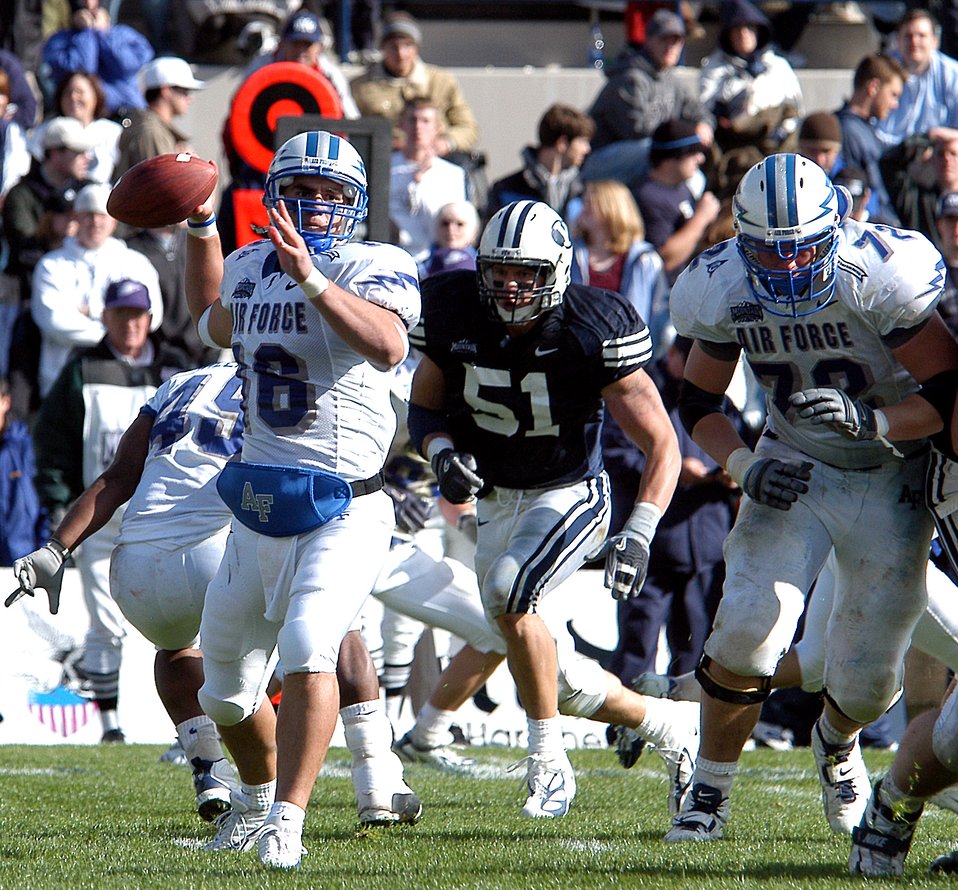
Falcons wave goodby to winning season

PROVO, Utah -- Senior quarterback Adam Fitch looks for a receiver along the sidelines Oct. 29 during the Falcon's 62-41 loss to Brigham Young University. Fitch, who entered the game after an injury to starting quarterback Shaun Carney, threw for five touchdowns in setting an academy record. Air Force closes out the home portion of its season Nov. 5 against Army.